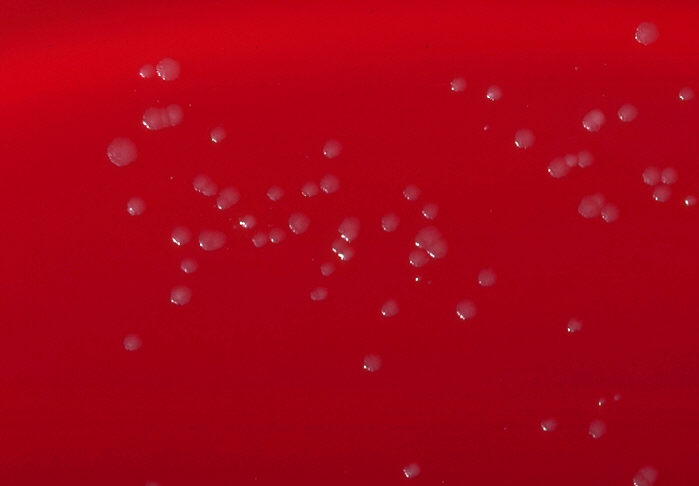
Blood agar plate culture of Corynebacterium renale.